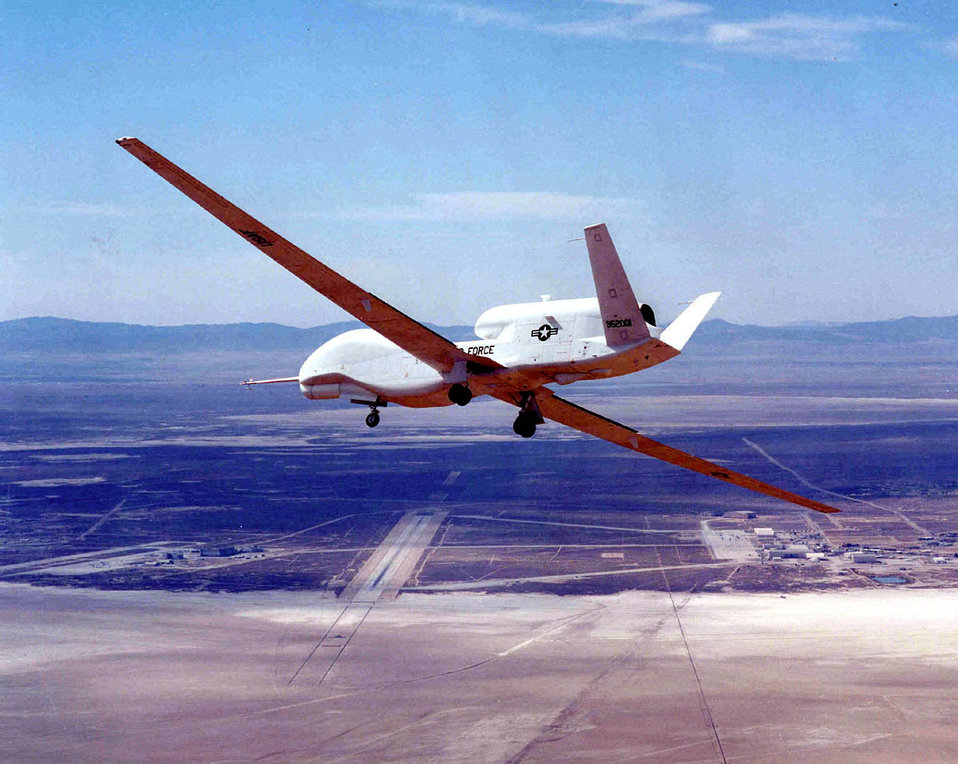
Global Hawk

EDWARDS AIR FORCE BASE, Calif. -- The Global Hawk unmanned aerial vehicle banks to land after a 24-hour training mission from Edwards to Alaska. Global Hawk is a long-endurance, high-altitude unmanned aerial vehicle intended for multiple battlefield applications. Capable of surveying an area the size of the state of Illinois, or 40,000 square miles, in just 24 hours, Global Hawk can range as far as 13,500 nautical miles at altitudes approaching 65,000 feet.